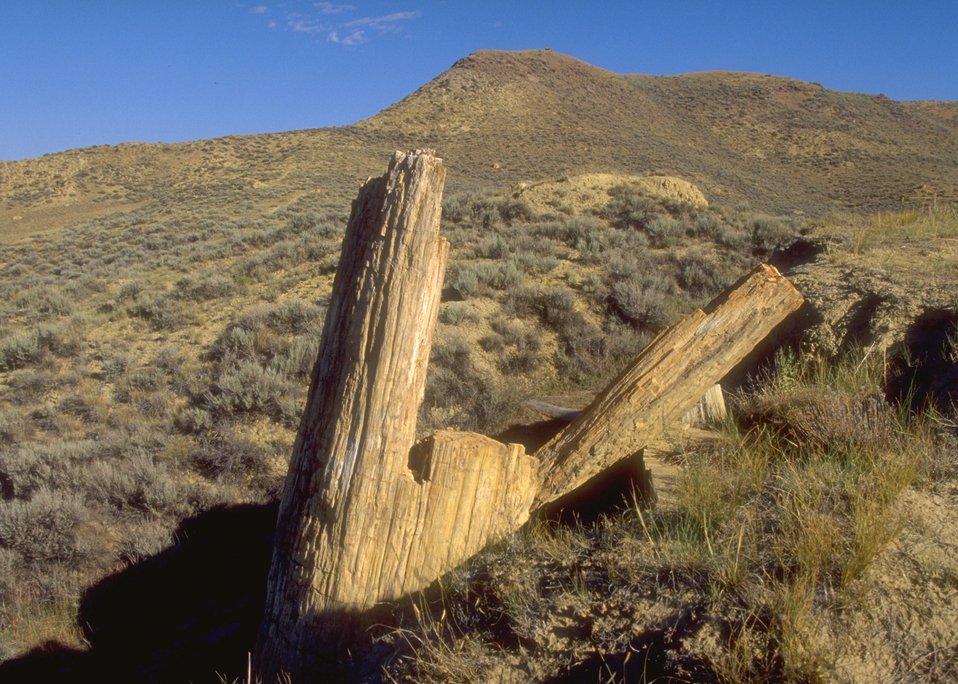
Dry Creek Petrified Tree Area, Buffalo Field Office.